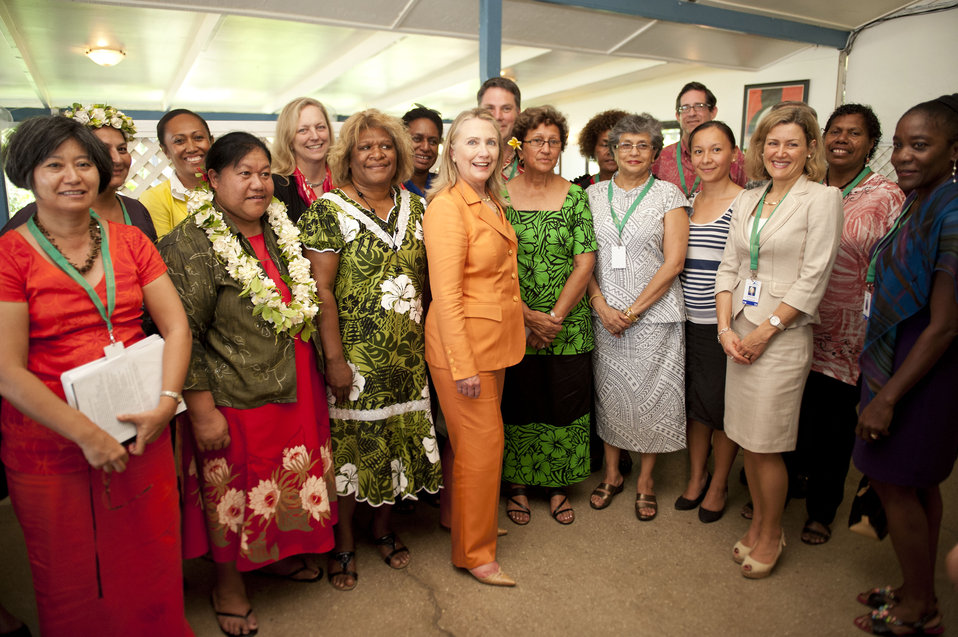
Secretary Clinton at the Rarotonga Dialogue on Gender Equality

U.S. Secretary of State Hillary Rodham Clinton poses for a photograph with participants of the Rarotonga Dialogue on Gender Equality in Rarotonga, Cook Islands, August 31, 2012.